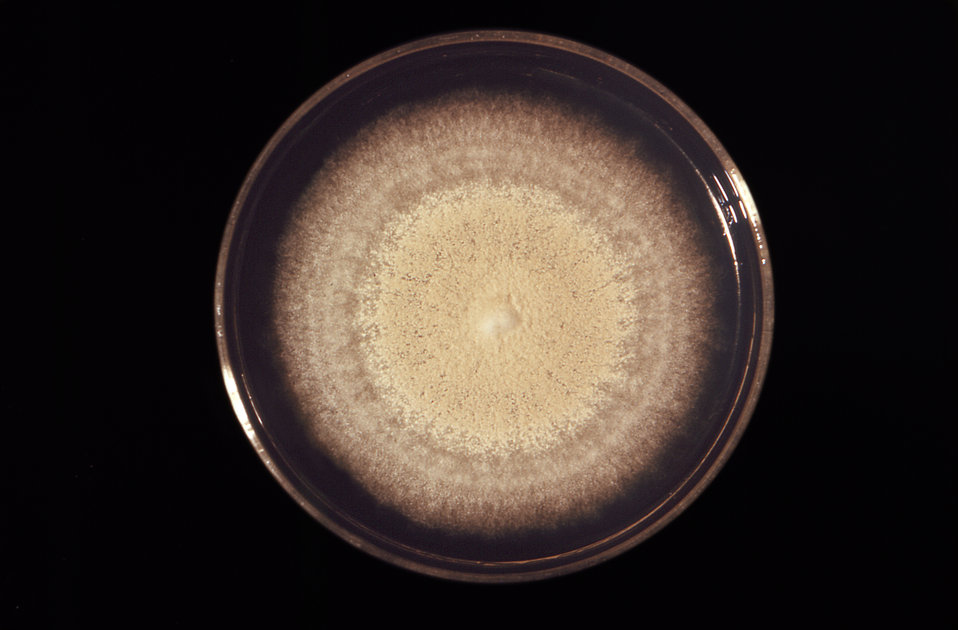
This is a front view of a Petri dish culture plate that had cultivated a large colony of the dermatophytic fungus, Trichophyton mentagrophytes. The colony displayed a morphology consisting of a granular appearance, beige coloration, and a concentric pattern of enlarging circles emanating from the colony's center. T. mentagrophytes colonial coloration ranges from white to bright yellowish-beige, to red-violet.